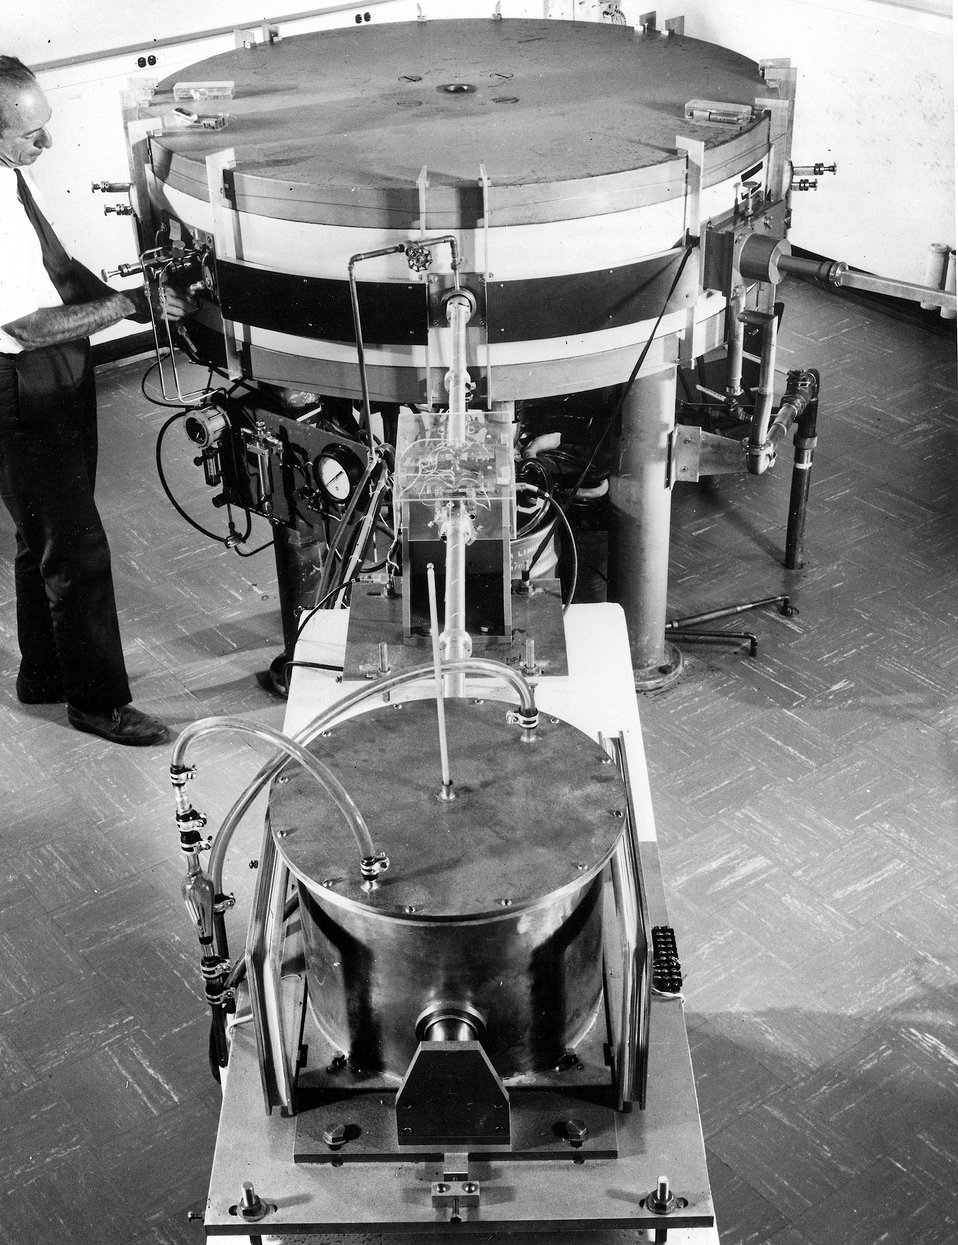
The beta-ray spectrometer shown in this photograph is used for measuring accurately intensities and energies of the monoenergetic groups of electrons emitted by many radioactive nuclei. c. 1967